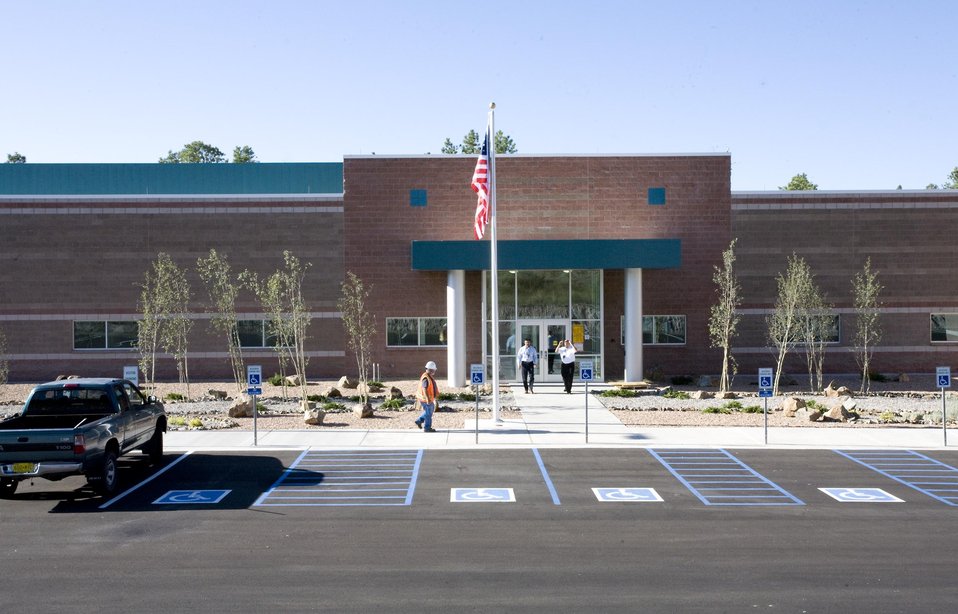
Entrance of Los Alamos National Laboratory, November 2011.